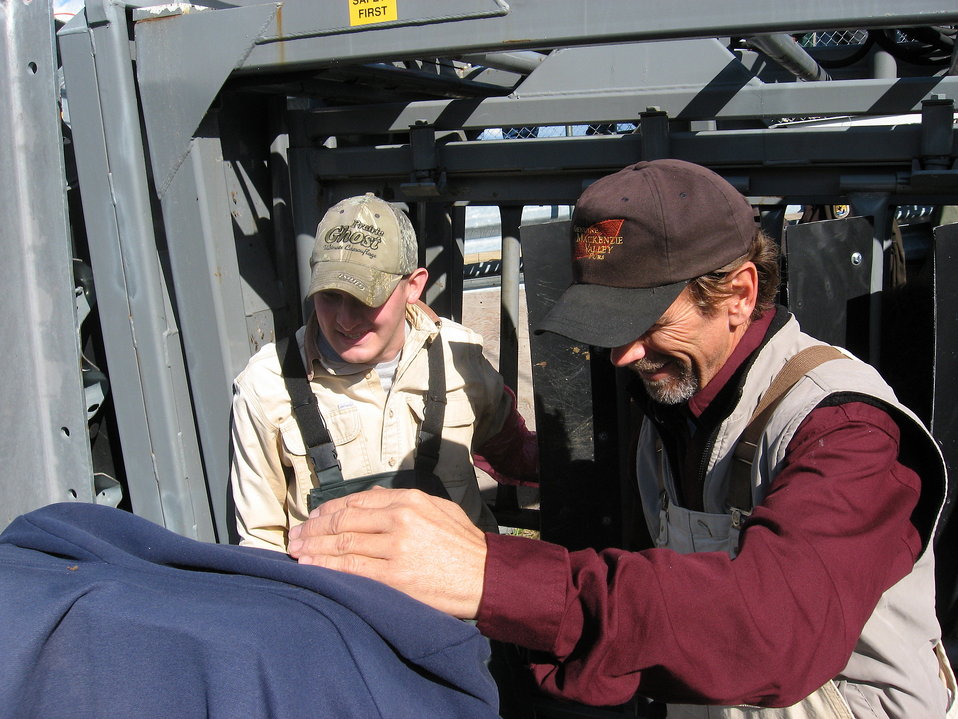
Bison Reproductive Study

Dr. Tom Roffe and Mike Borgreen of the Wildlife Health Office look at ultrasound images chuteside during roundup at the National Bison Range in Montana. Ultrasound was performed on bison cows during roundup to determine pregnancy status.